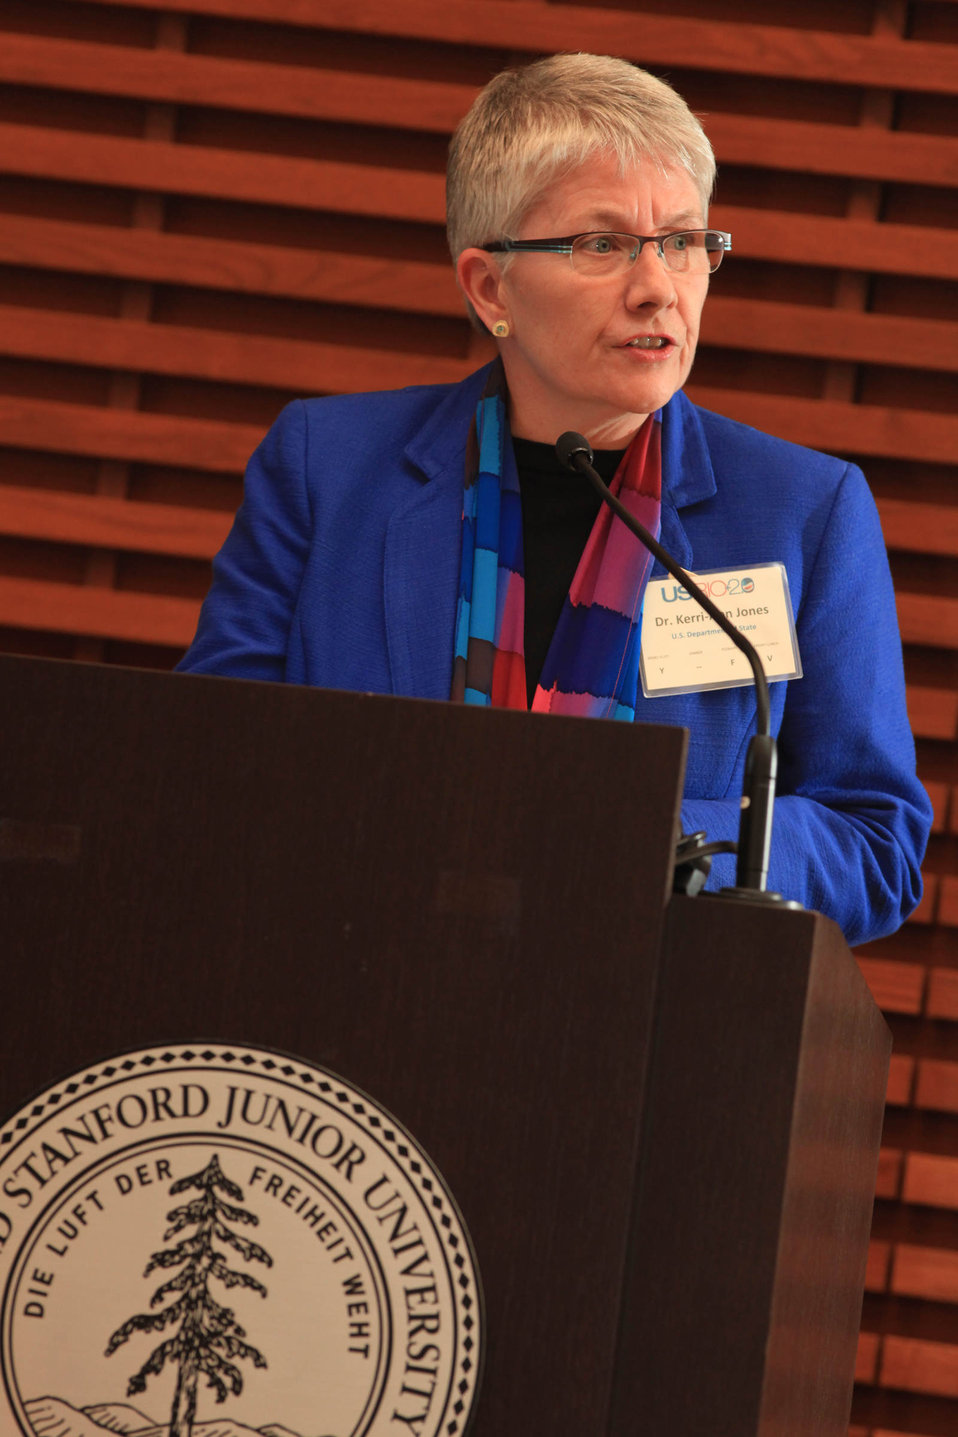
Assistant Secretary Jones Opens the Introductory Session of the USRIO 2.0 Conference

Assistant Secretary of State for Oceans and International Environmental and Scientific Affairs Dr. Kerri-Ann Jones opens the Introductory session of the USRIO 2.0 conference at the Oberndorf Event Center of the Stanford Graduate School of Business Knight Center in Stanford, California, on February 2, 2012.